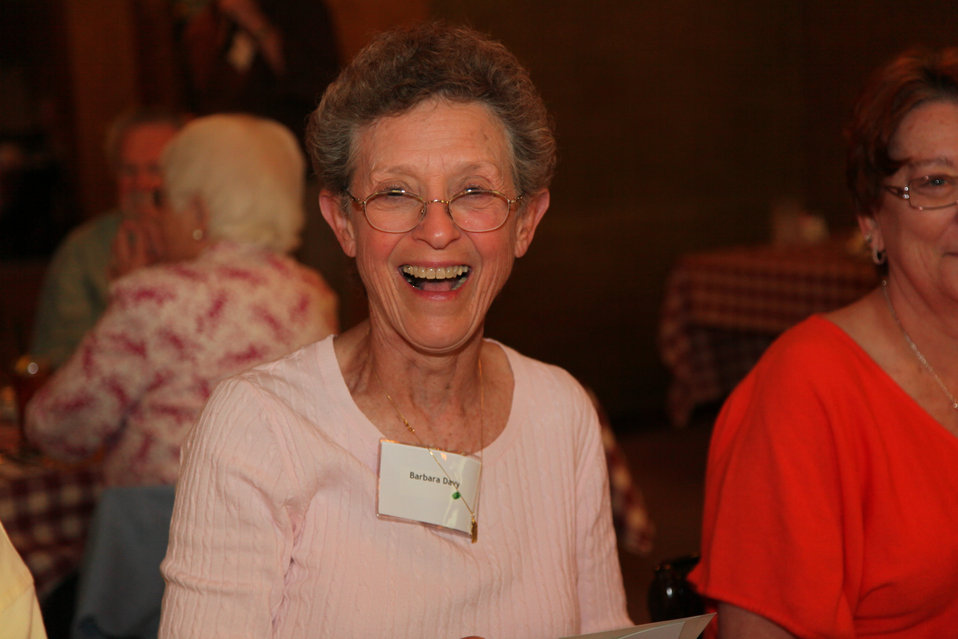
Retirees celebrate at 30th annual luncheon

Former U.S. Army Corps of Engineers Sacramento District employee Barbara Davy smiles for the camera at the 30th annual Sacramento district retiree luncheon at Club Pheasant in West Sacramento, Calif. May 26, 2011.

Davy was recognized at the event as having the most (42) years of service to the Corps of the more than 50 retirees in attendance.

The retirees present collectively represented more than a millennium of service to the Corps.